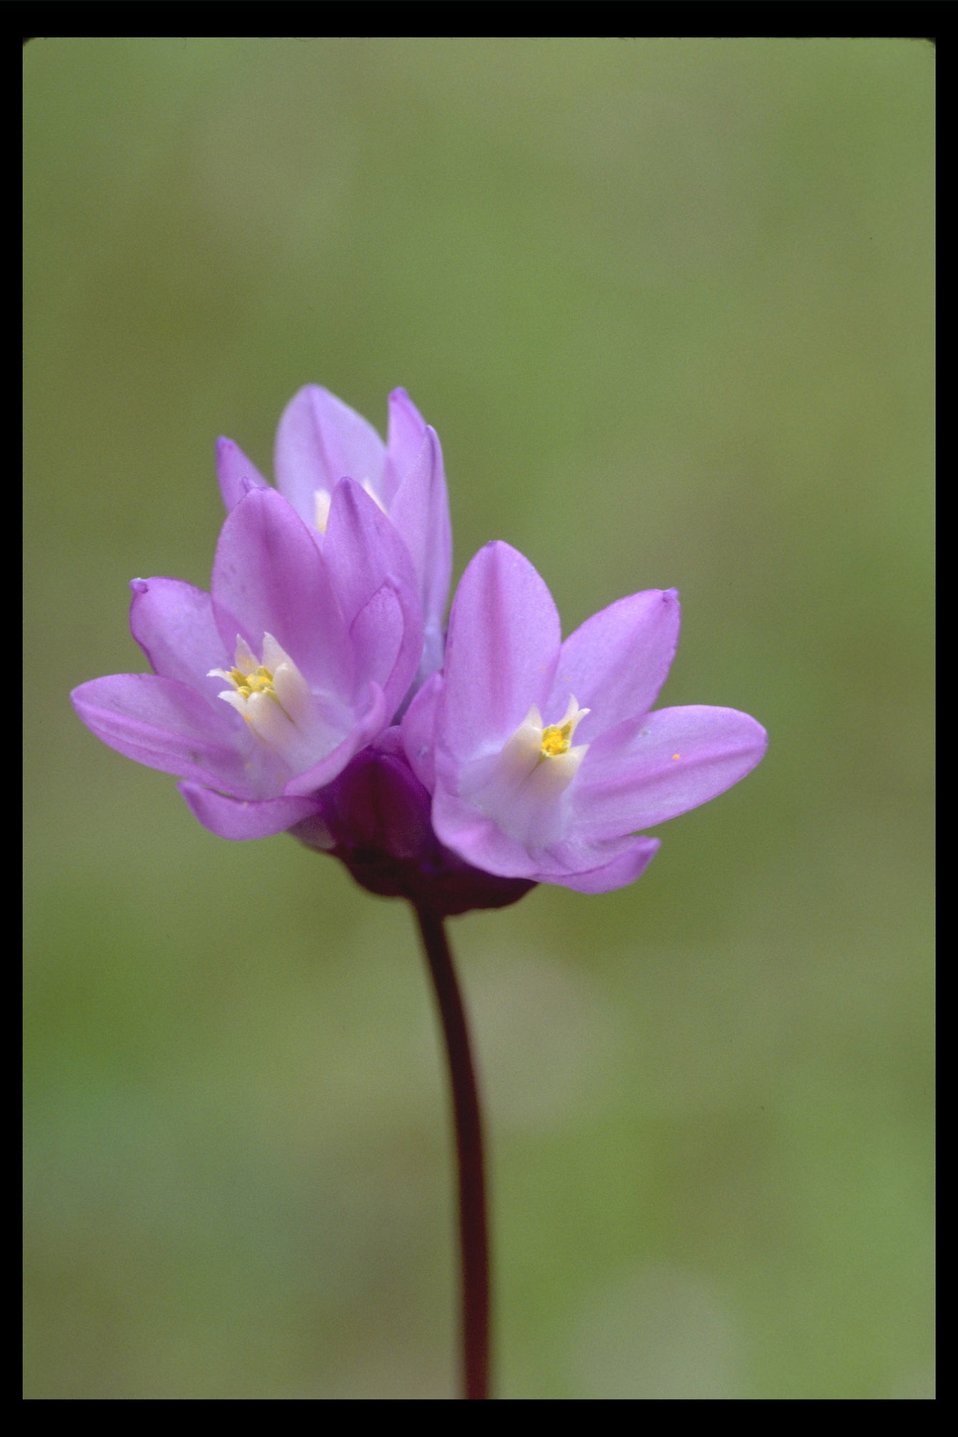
Forktooth Ookow (Dichelostema congestum) found along Tiller Highway.